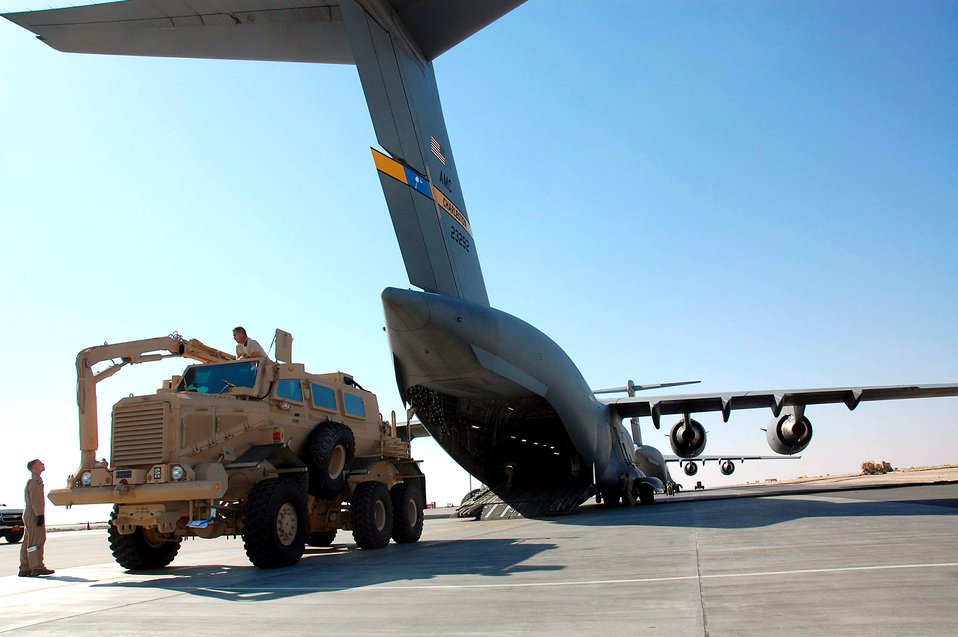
To serve and protect

Airmen from the 386th and 379th Air Expeditionary Wings load a mine resistant ambush protected vehicle onto a C-17 Globemaster III from Charleston Air Force Base, S.C., Dec. 28 in Southwest Asia. The MRAP was heading to Iraq and is designed to help protect military members from mines and improvised explosive devices. The C-17's aircrew members are from McGuire AFB, N.J., and currently deployed to an air base in the Middle East.